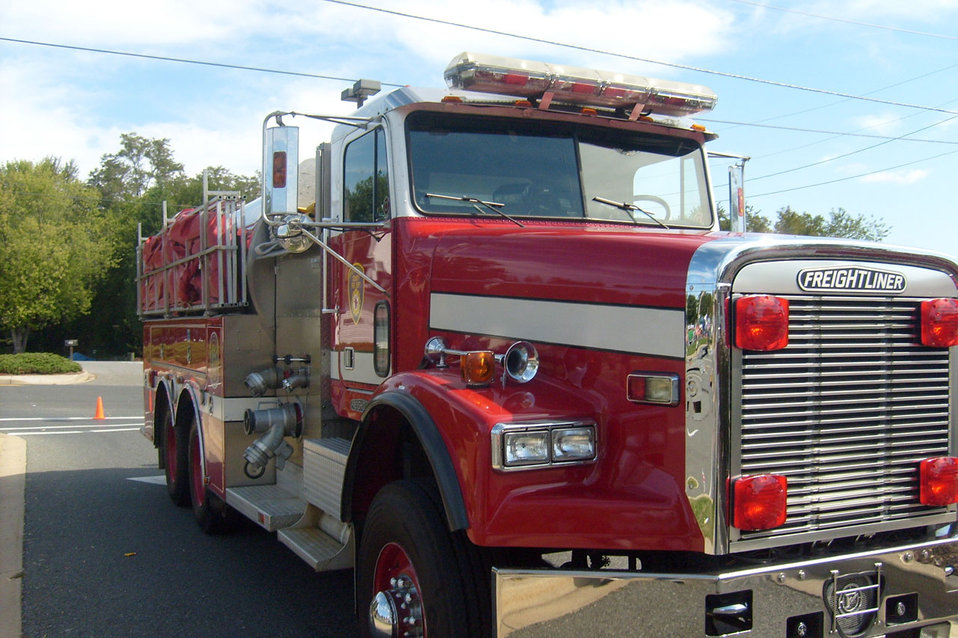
Fire truck

Red fire truck.